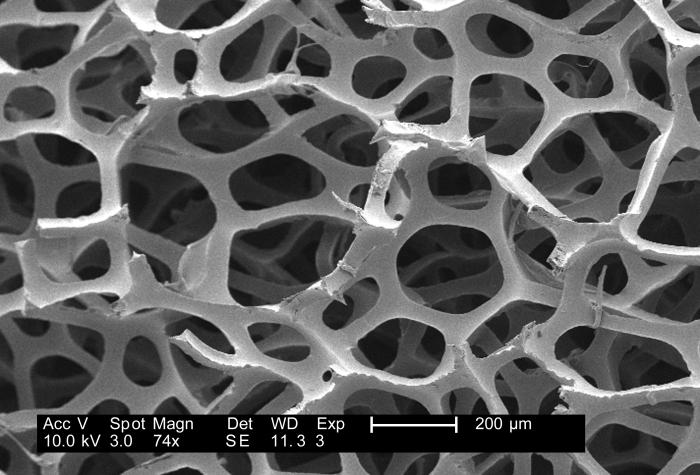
Under a low magnification of 74x, this 2007 scanning electron micrograph (SEM) depicted the fibrous configuration of a dry macrofoam sponge swabs. This swab, as well as three other materials, including polyester (see PHIL 9735), rayon (see PHIL 9734) and cotton (see PHIL 9732, and 9733), were scanned for a CDC study involving their efficiency in recovery of Bacillus anthracis bacterial spores from steel coupons that had been inoculated with a spore suspension of known concentration. See PHIL 9736, 9737, 9738, 9749, 9751, an 9752, for other views of this material. The article discussing the description of this swab material analysis, and the analytical results was published in 'Emerging Infectious Diseases', Vol. 10, No. 6, June, 2004, and was entitled, Swab Materials and Bacillus anthracis Spore Recovery from Nonporous Surfaces. A link to this article is found below.